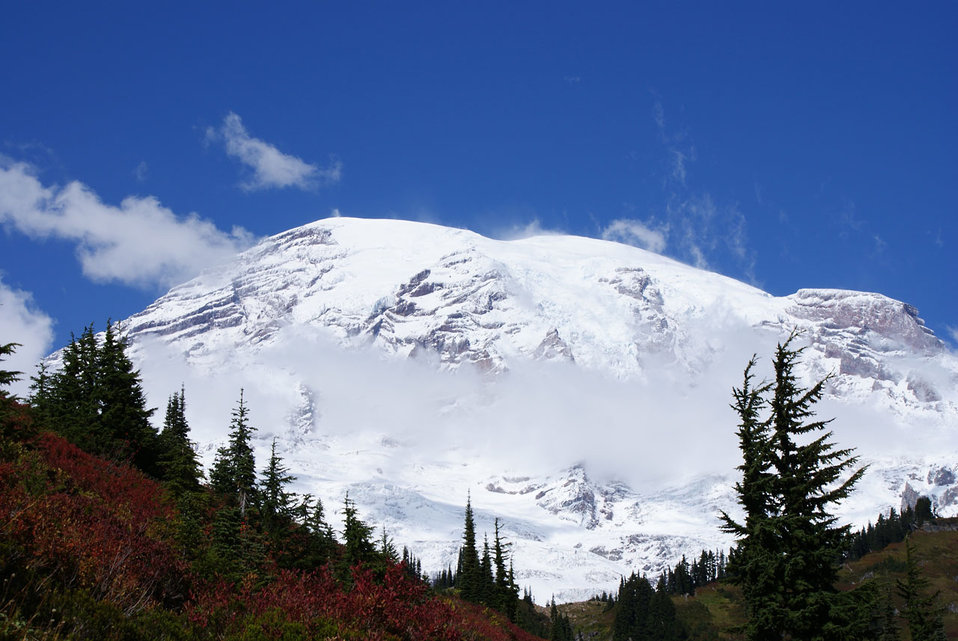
Mount rainier after a snow storm..